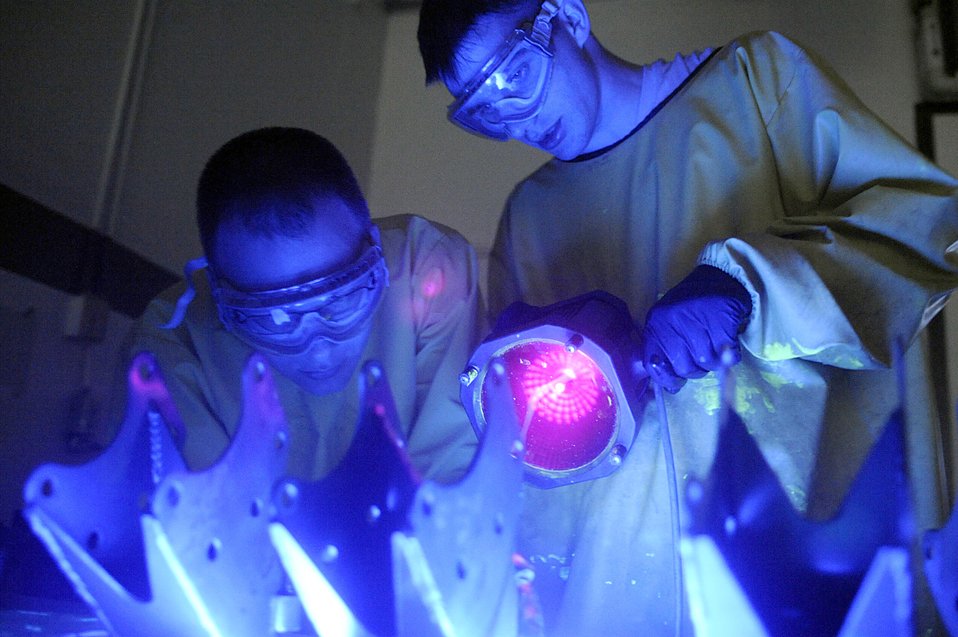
Ellsworth ultraviolet light inspection

Staff Sgt. Ehud Torres (left) and Airman 1st Class Evan Bryant inspect forward support brackets using an ultraviolet light May 20, 2010, at Ellsworth Air Force Base, S.D. The Airmen are non-destructive inspection technicians with the 28th Maintenance Squadron.